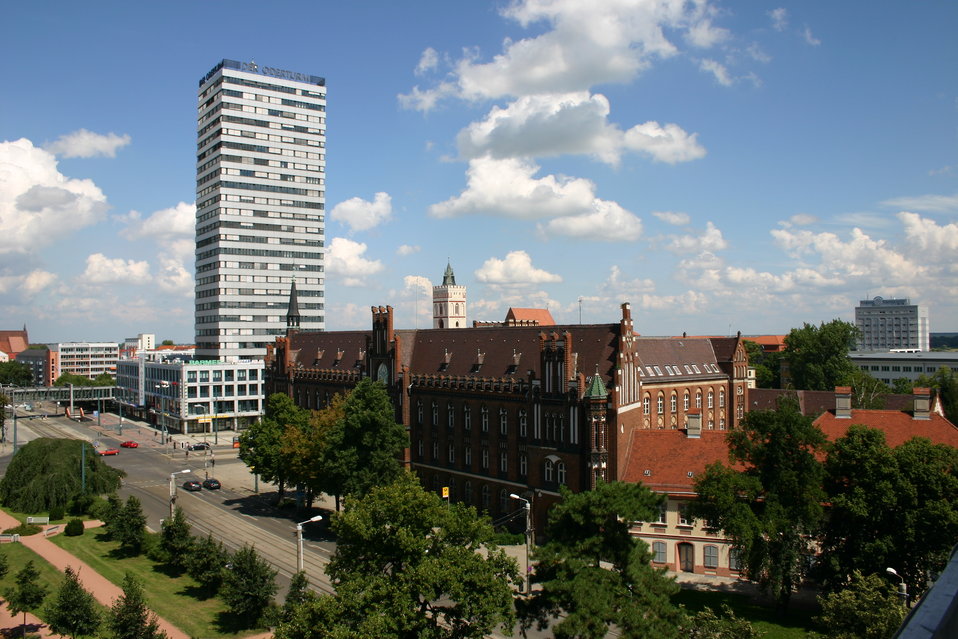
Deutsch: Stadtzentrum mit Post und Oderturm in Frankfurt (Oder), Brandenburg, Deutschland City centry with post office and skyscraper Oderturm in Frankfurt (Oder), Brandenburg, Germany